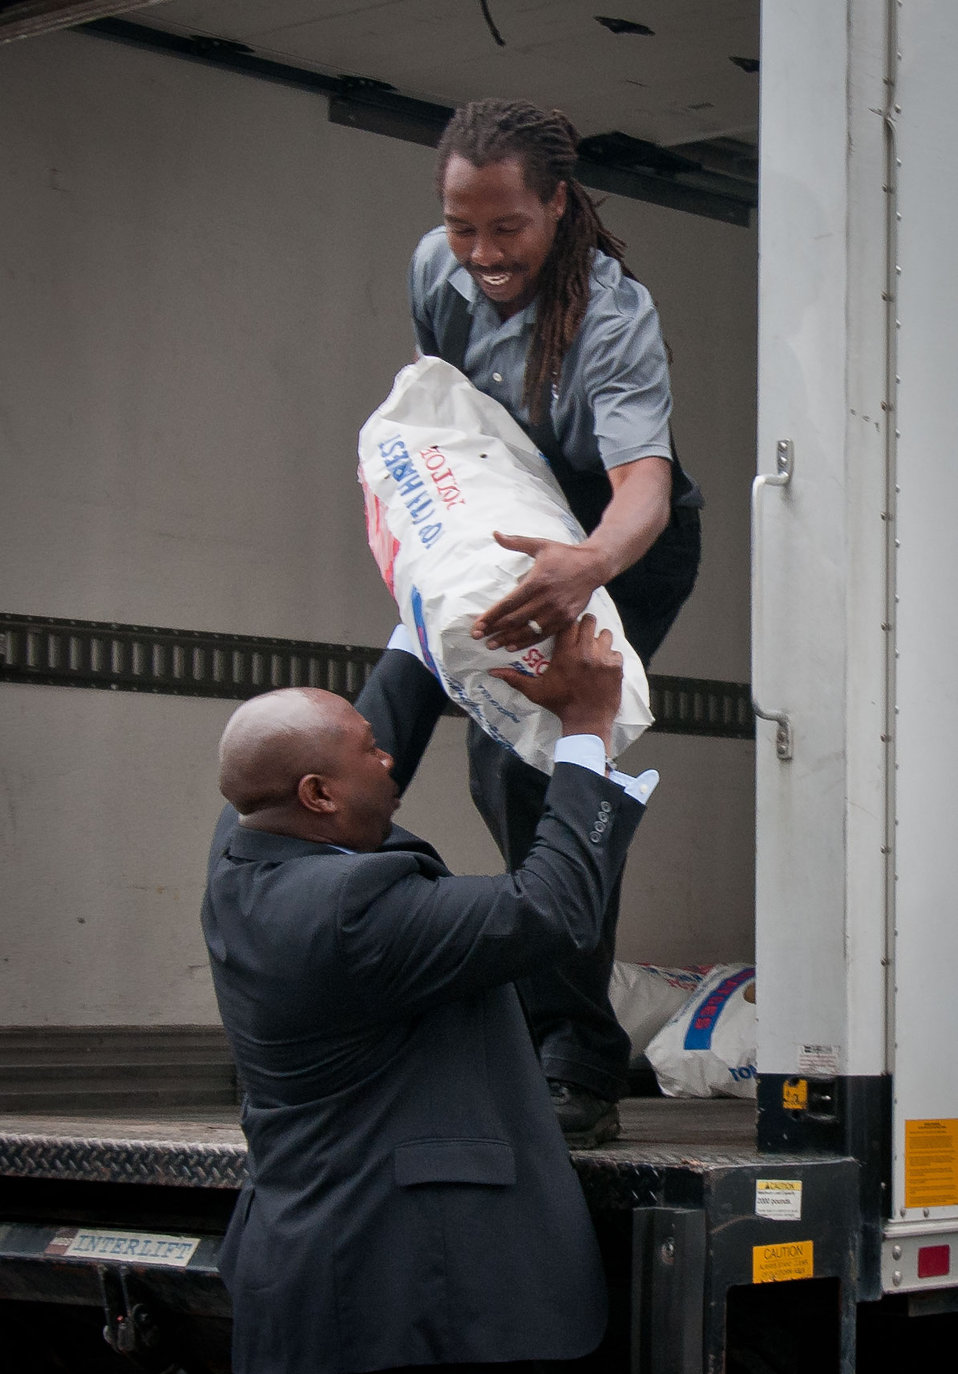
Agriculture Farm and Foreign Agriculture Service (FFAS) Deputy Under Secretary Karis Gutter lifted 20 50-pound bags of potatoes to DC Central Kitchen Fleet Coordinator/Transportation Driver Anthony Turner during the donation transfer of FFAS Under Secretary Michael Scuse 1,000 pounds of potatoes to DC Central Kitchen, for the Feds Feed Families Food Drive, on Monday August 20, 2012 in front of the Agriculture headquarters in Washington, D.C. Under Secretary Scuse, a farmer himself purchased the half a ton of potatoes at nearby Wicks farm, in Delaware. Secretary Scuse farms 1,700 acres of corn, soybeans and wheat. He says that this is the first of many more donations this year.